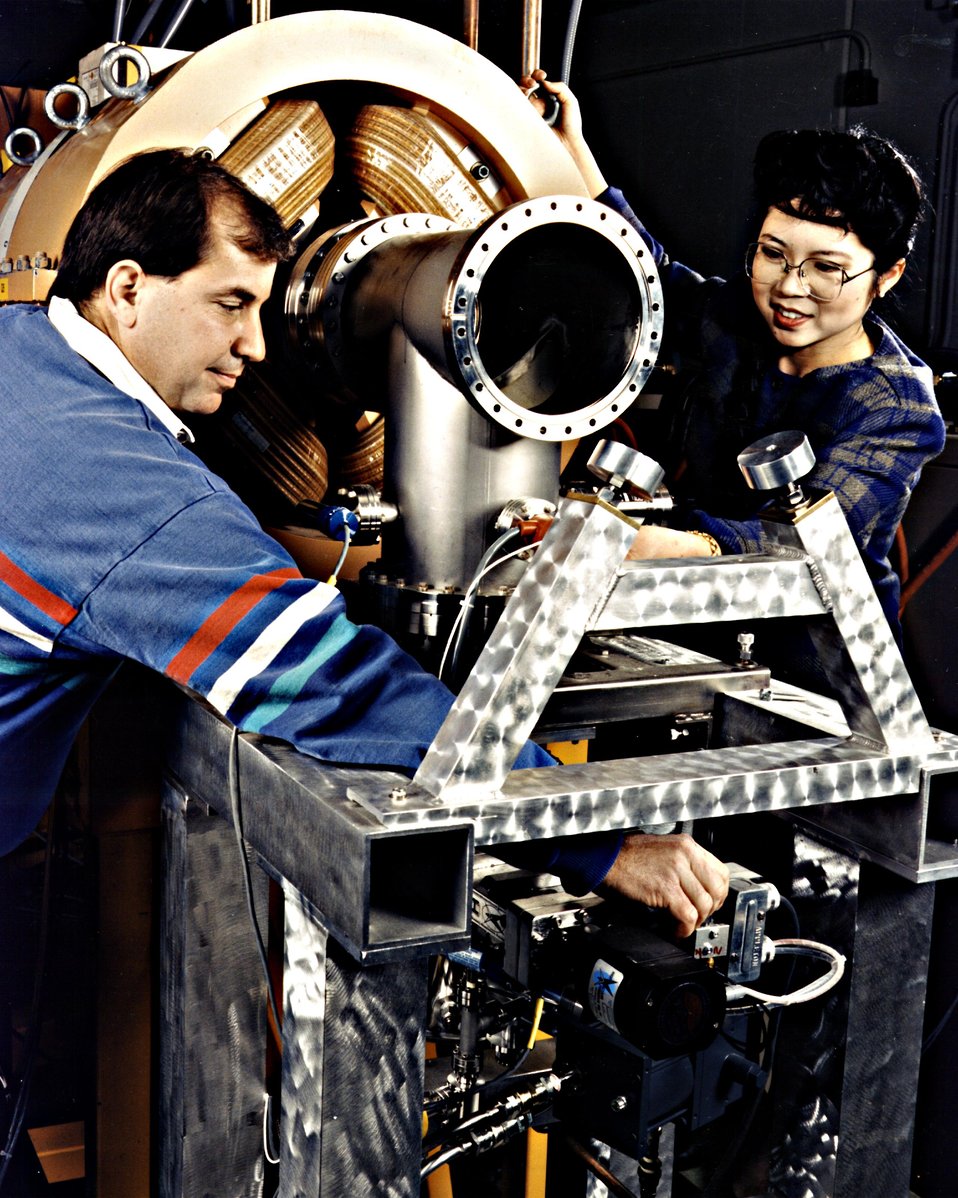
ORNL SCIENTISTS INSPECT THE RECOIL MASS SPECTROMETER AT ORNL'S HRIBF. (1995)

THE SCIENTISTS ARE INSPECTING THE RECOIL MASS SPECTROMETER, WHICH IS PART OF THE NUCLEAR STRUCTURE EXPERIMENTAL STATION FOR ORNL'S HOLIFIELD RADIOACTIVE ION BEAM FACILITY (HRIBF). SCIENTISTS BELIEVE THAT THE FACILITY WILL HELP RESEARCHERS ANSWER QUESTIONS ABOUT NUCLEAR PHYSICS AND NUCLEAR ASTROPHYSICS.